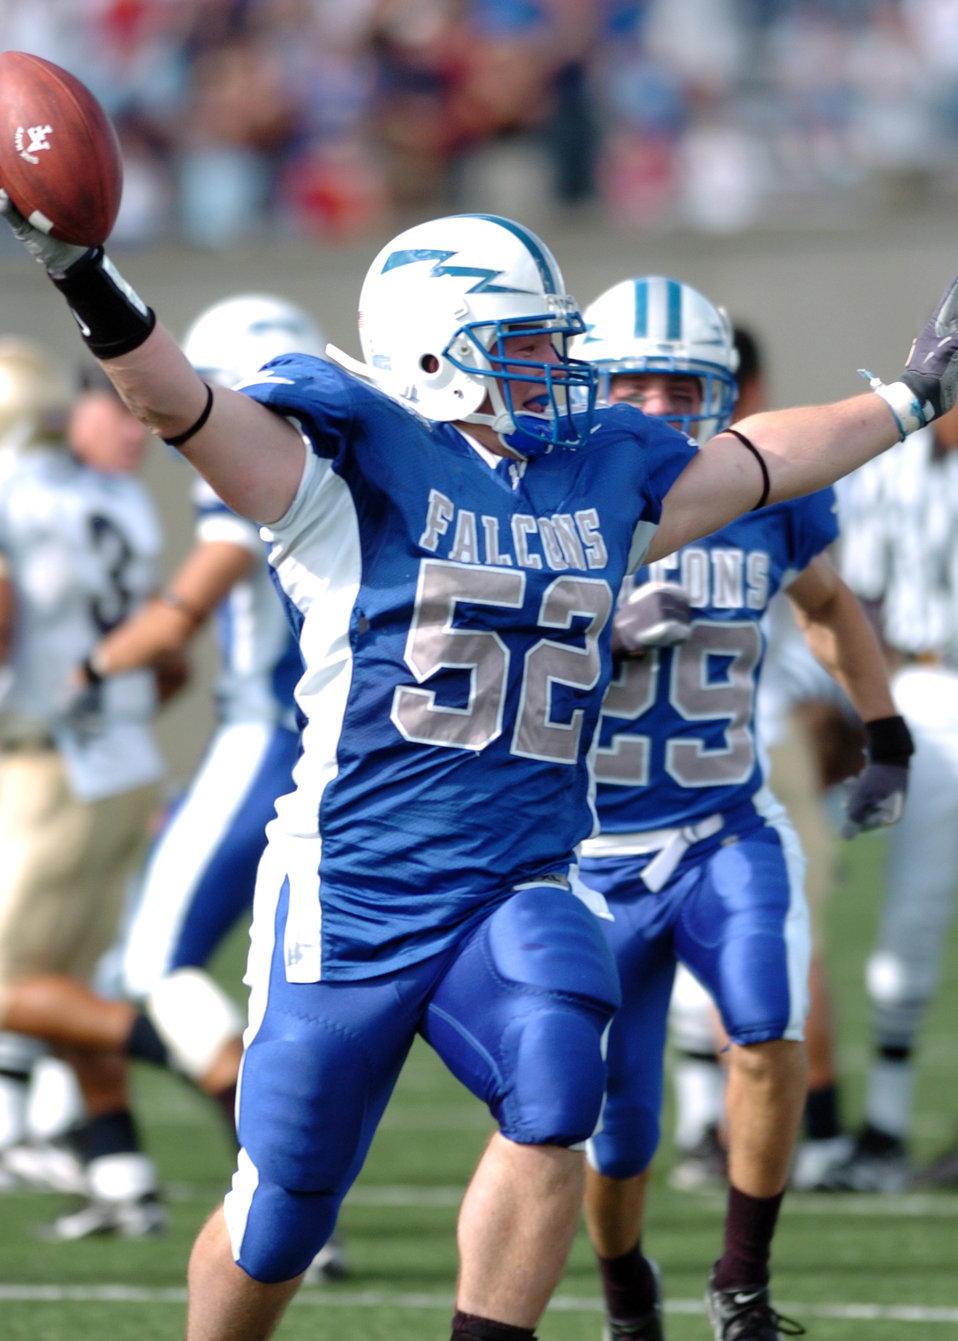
Onside kick recovery

Air Force linebacker Austin Randle celebrates after recovering a Falcon on-side kick in the closing minutes of their game against Navy Saturday. The ensuing Air Force drive sputtered, however, and time ran out on the Falcons. Navy won, 24-17.